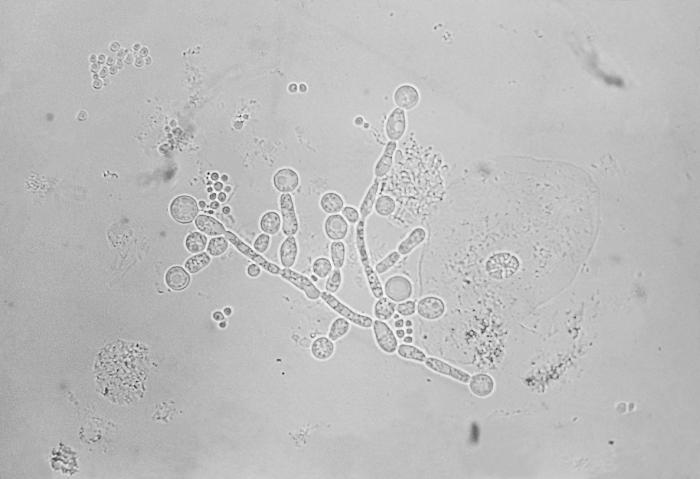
This tramsmission photomicrograph depicted a number of Candida albicans chlamydospores, or chlamydoconidium that were present in a sputum specimen. Chlamydospores are the round terminal asexual segments of the asexual conidium, which are not shed at maturity. C. albicans is a yeast-like member of the phylum known as Deuteromycota, or 'Fungi Imperfecti, and is the etiologic agent responsible for the disease, 'Candidiasis'.